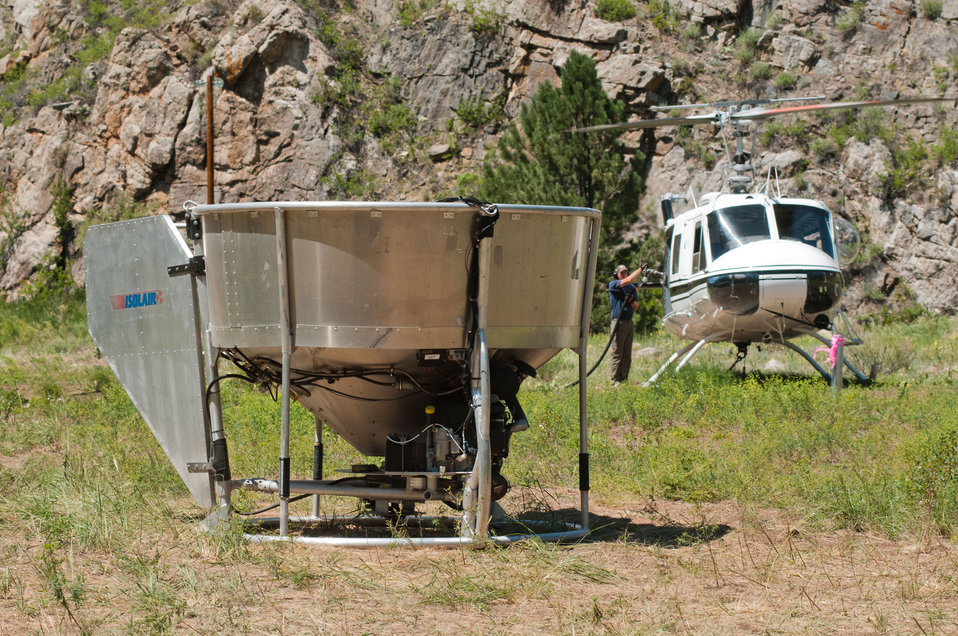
Mountain West Helicopter aircraft mechanic Garry Saunders refuels a Bell UH-1H (2-blade rotor), at the Seaman Reservoir spillway, near Fort Collins, Colo., on Friday, July 20, 2012. In the foreground is an aerial seed spreader, used in the continuing aerial application of straw and seed mix to mitigate soil and ash runoff from the mountainous terrain leading to Seaman Reservoir, drinking water resource for the City of Greeley. The 100-150-foot cable below it holds and releases loads of certified straw weighing 1,400 – 2,000 pounds. Forest service lands received straw, while private and other lands receive a seed mix and straw to promote ground cover plant growth on ash-covered lands. In total, 1,800 tons of straw will be applied during the 14-day operation. One quarter of the cost was paid by the City of Greeley and the U.S. Department of Agriculture funded the remainder. The Hewlett Gulch Fire was started by a camper’s alcohol stove, on May 14, at the saddle of a picturesque mountain ridge along the Hewlett Gulch Trail of Poudre Canyon, in the Roosevelt National Forest, 60 miles north of Denver. At it’s peak more than 400 firefighters were battling fires being pushed by 50 mph winds that helped blacken over 12-square-miles of dry ground cover, brush and trees. Many of the trees were already dead and tinder dry from beetle-kill. Their efforts have successfully kept water in the reservoir clean and clear, while downstream water flow has gone from famous Colorado clear water to nearly black flows of water heavily laden with ash, silt, and burnt debris that recent thunderstorms have already washed down from the mountainsides.